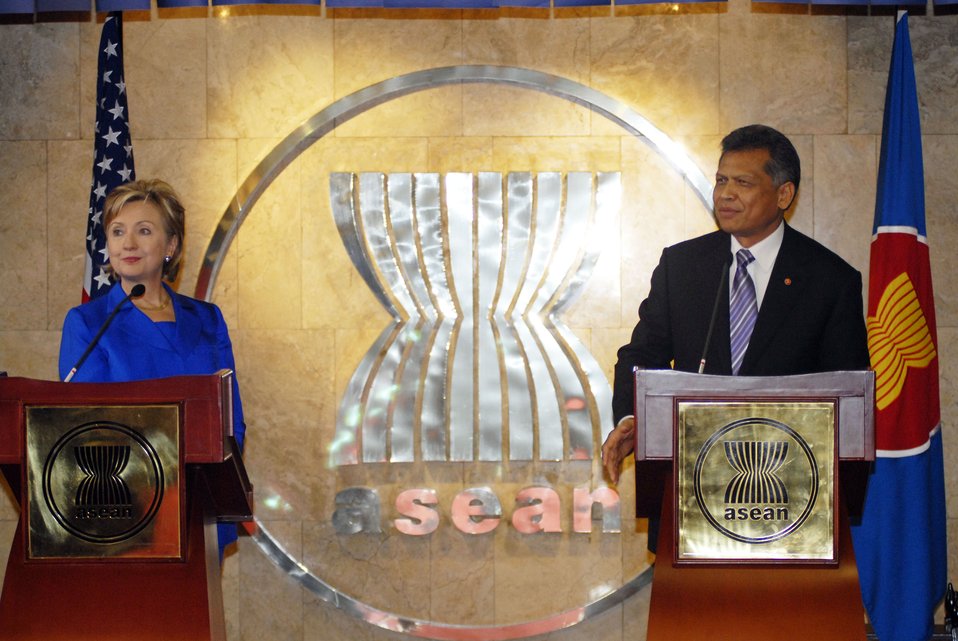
Secretary Clinton and ASEAN Secretary General Pitsuwan

Secretary Clinton with ASEAN Secretary General, Dr. Surin Pitsuwan, take questions at the Press Conference. in Jakarta, Indonesia February 19, 2009.